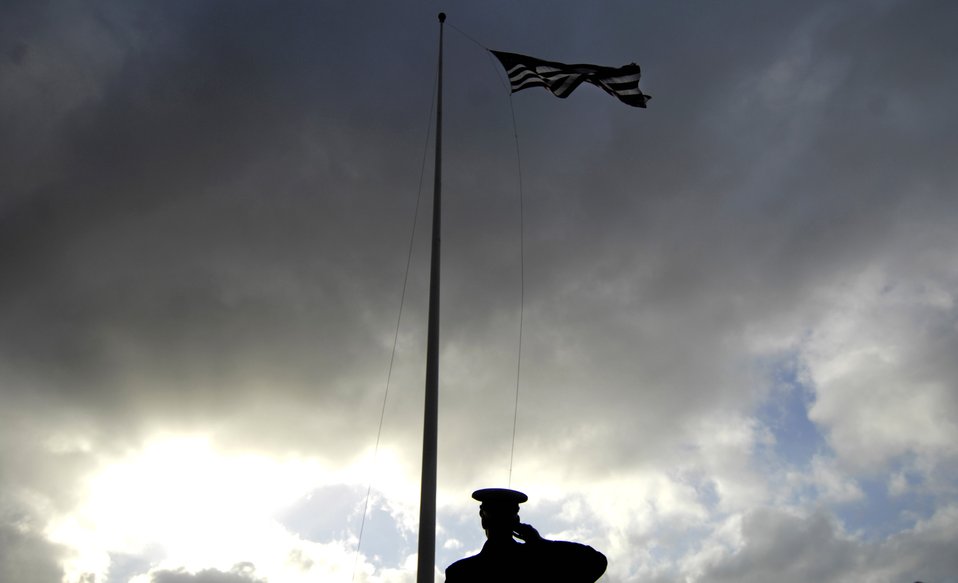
Remembering the Pearl Harbor attack

A ceremony at the Hickam Air Force Base, Hawaii, flagpole was held Dec. 7 to honor the 189 who died and 303 who were wounded during a surprise attack by Japanese fighter aircraft 65 years ago. The consolidated barracks, what is now the Pacific Air Forces headquarters, was reportedly the most bombed building on Oahu.